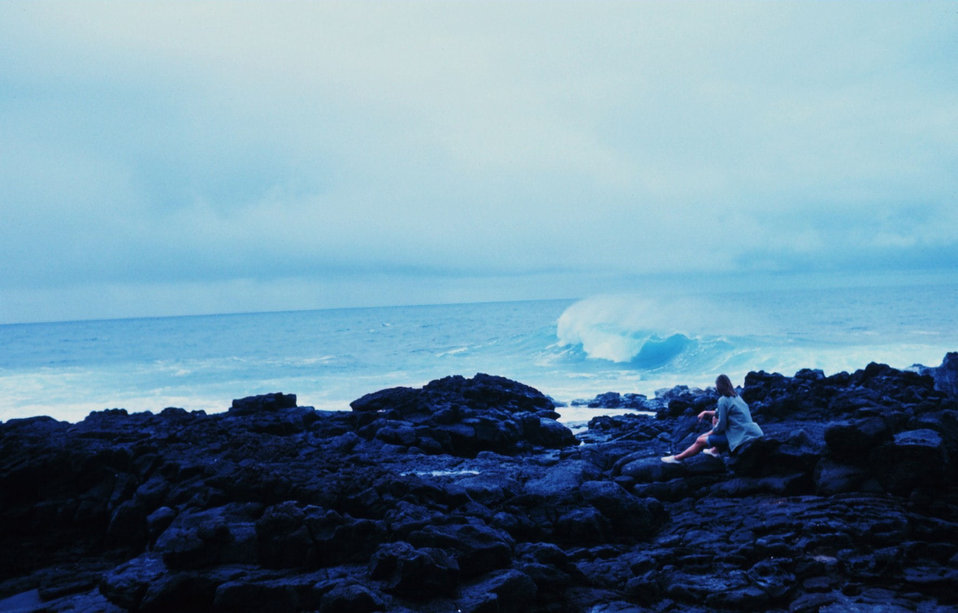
Mesmerized by the eternal crashing of waves.